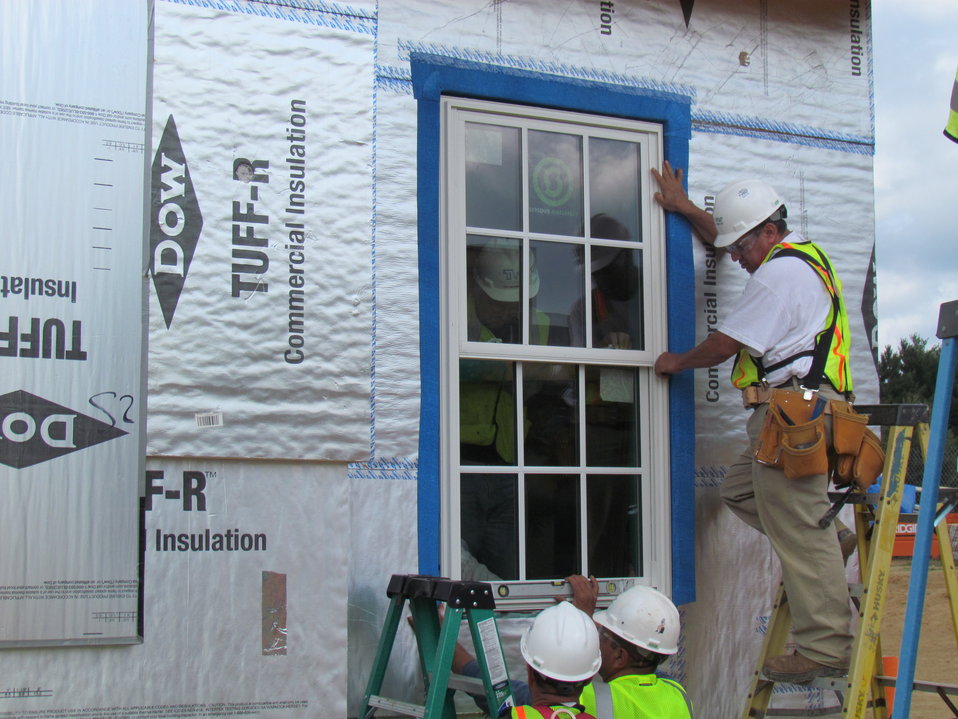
Net-Zero Energy Residential Test Facility - Workmen installing first window in facility. Personnel from window manufacturer present to assist in installation and address any installation related questions.